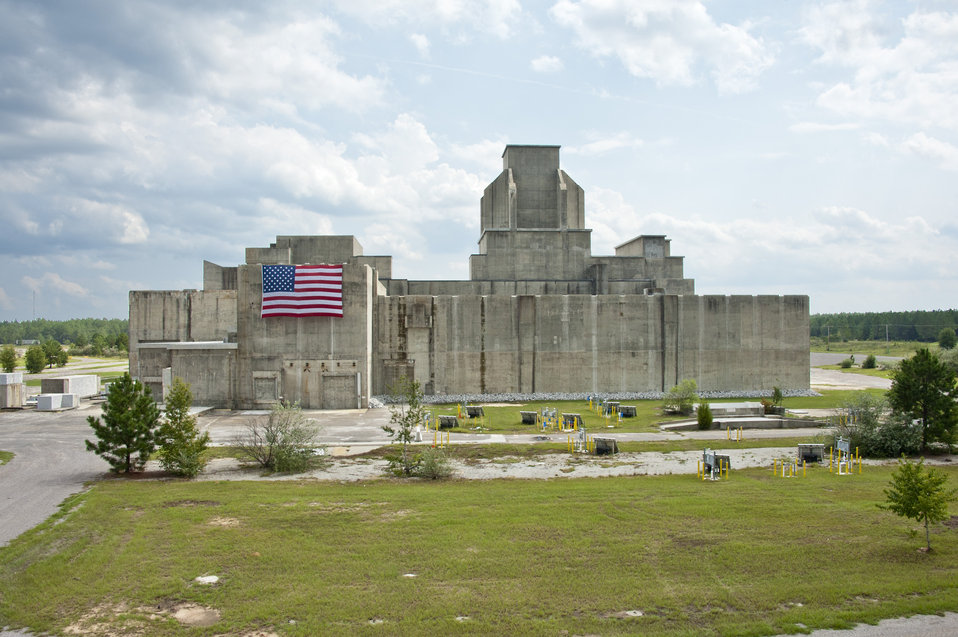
P-Reactor

P Reactor, deactivated and decommissioned under the Recovery Act.